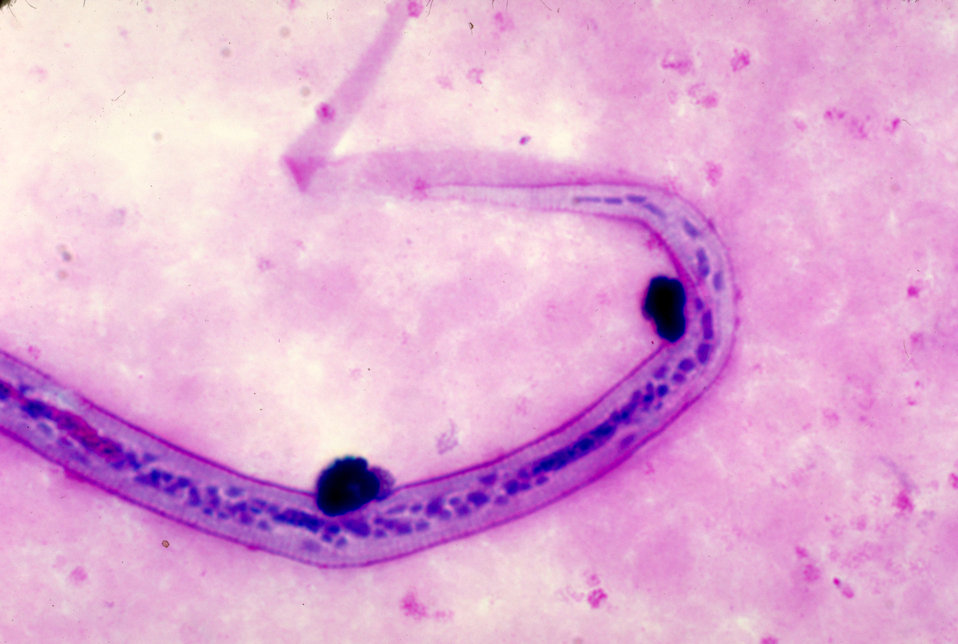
This is a micrograph of the posterior end of a Wuchereria bancrofti microfilaria in blood smear using Giemsa stain.